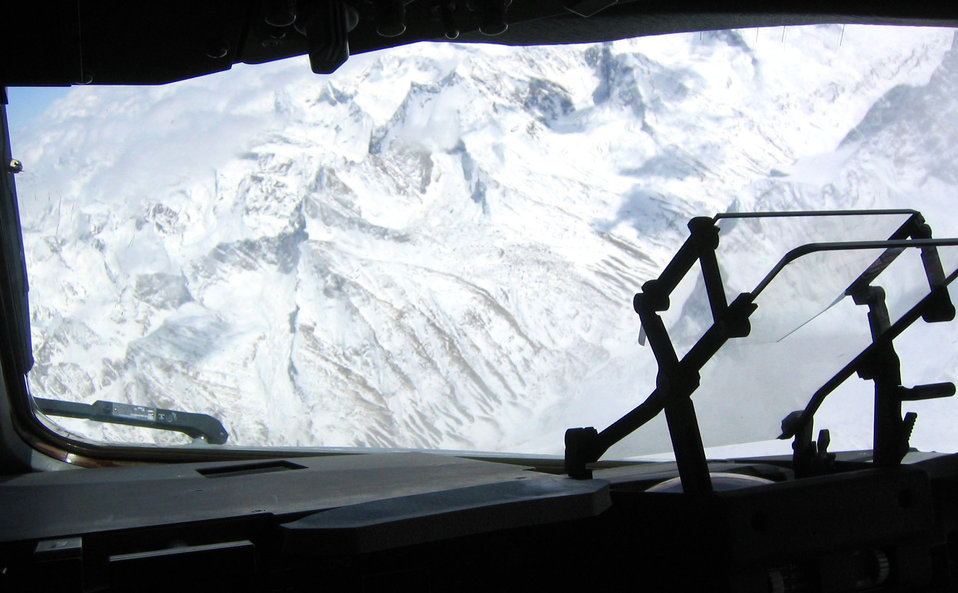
Single C-17 sets airdrop record

The snow-covered mountains of Afghanistan are seen from the cockpit of an Air Force C-17 Globemaster III. The humanitarian aid airdropped in the region help Afghans make it through the harsh winter months. The C-17 and accompanying aircrew are deployed to the 379th Air Expeditionary Wing at a forward-deployed location from McChord Air Force Base, Wash.